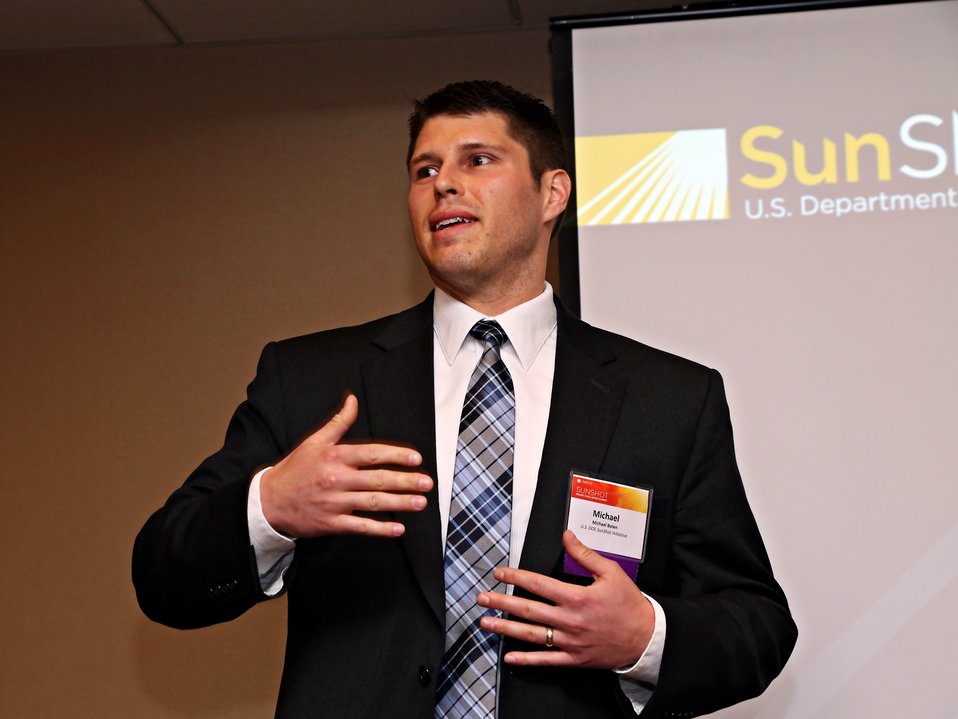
Day 2 Subprogram Overviews 8

SunShot staff speak at Subprogram Overview sessions.